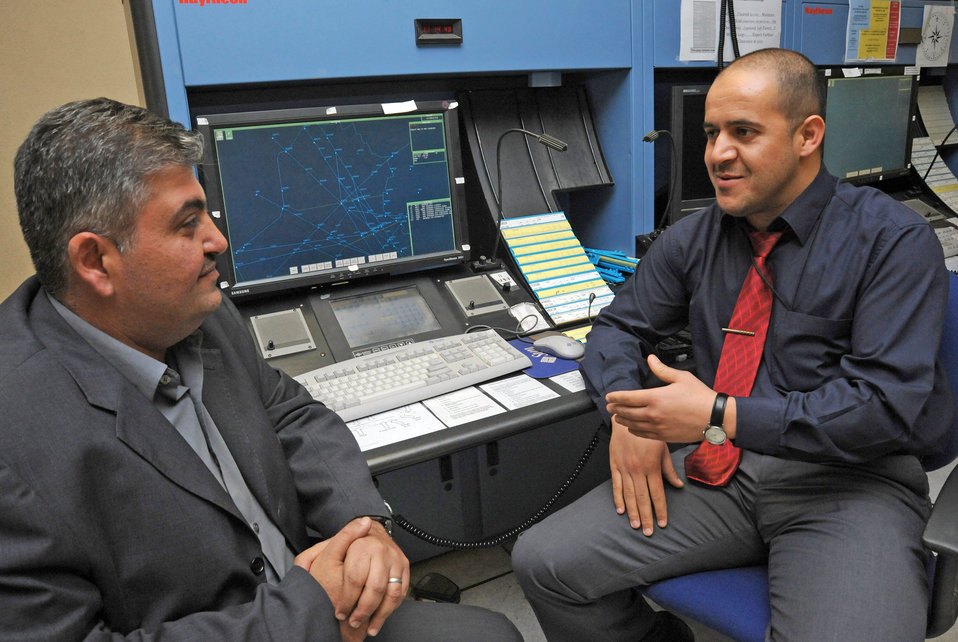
ICAA makes airways appear out of thin air

Iraqi Civil Aviation Authority members discuss the new airway structure Nov. 18, 2009. Air Force members spent seven months assisting the Iraqis with developing new air routes. These routes will increase efficiency and capacity through Iraqi airspace allowing the country to normalize airspace and increase air traffic.